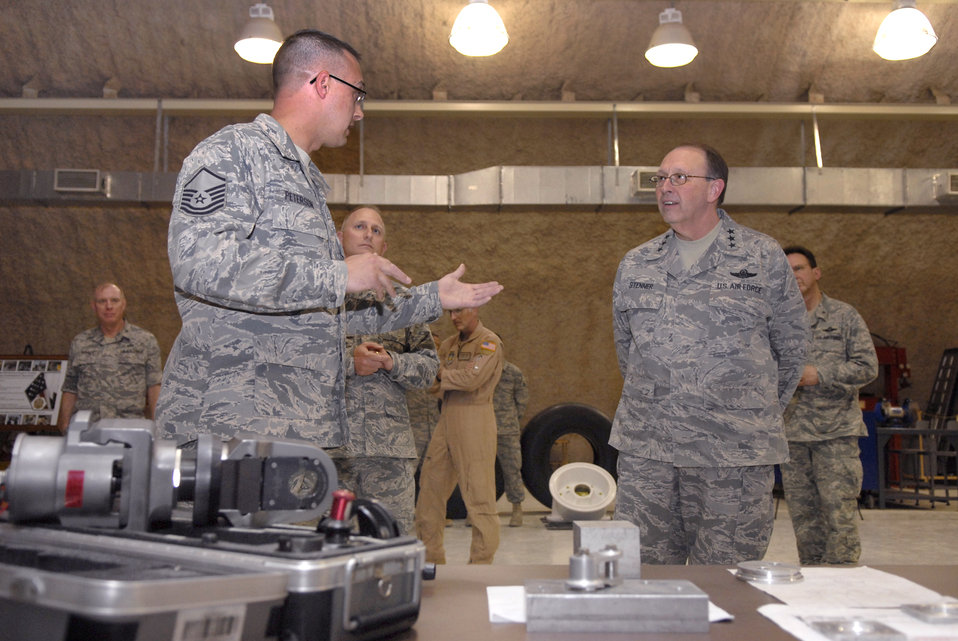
Reserve commander meets with deployed reservists

Master Sgt. Jason Peterson briefs Lt. Gen. Charles Stenner, commander of Air Force Reserve Command and chief of the Air Force Reserve, April 6 during a visit of the 379th Expeditionary Maintenance Squadron Centralized Repair Facilities at an air base in Southwest Asia. General Stenner visited many areas of the base and spoke with numerous Reserve Airmen. Sergeant Peterson, a metals tech craftsman with the 379th EXMS, is deployed from Grissom Air Reserve Base, Ind..